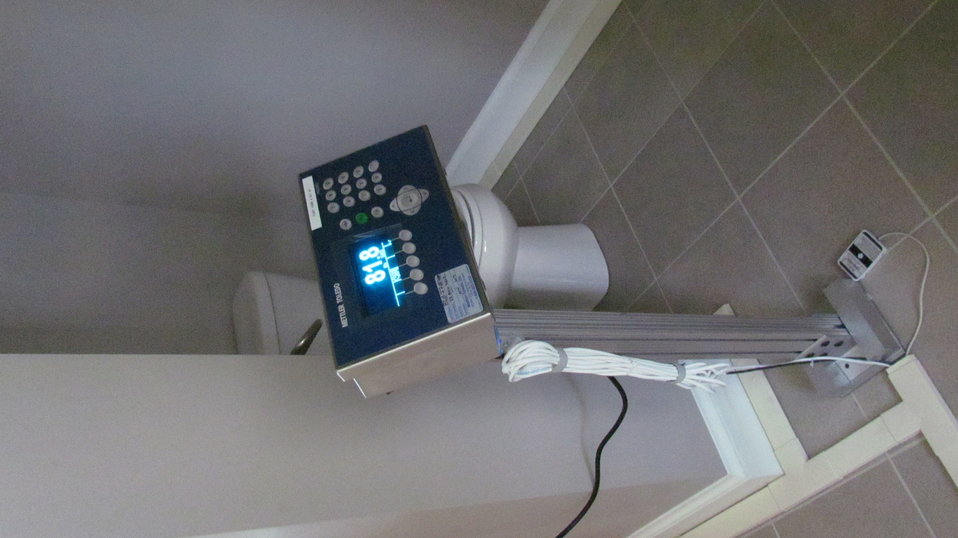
Digital readout associated with load cell in master bathroom used to measure the mass of water withdrawn during the scheduled showers.